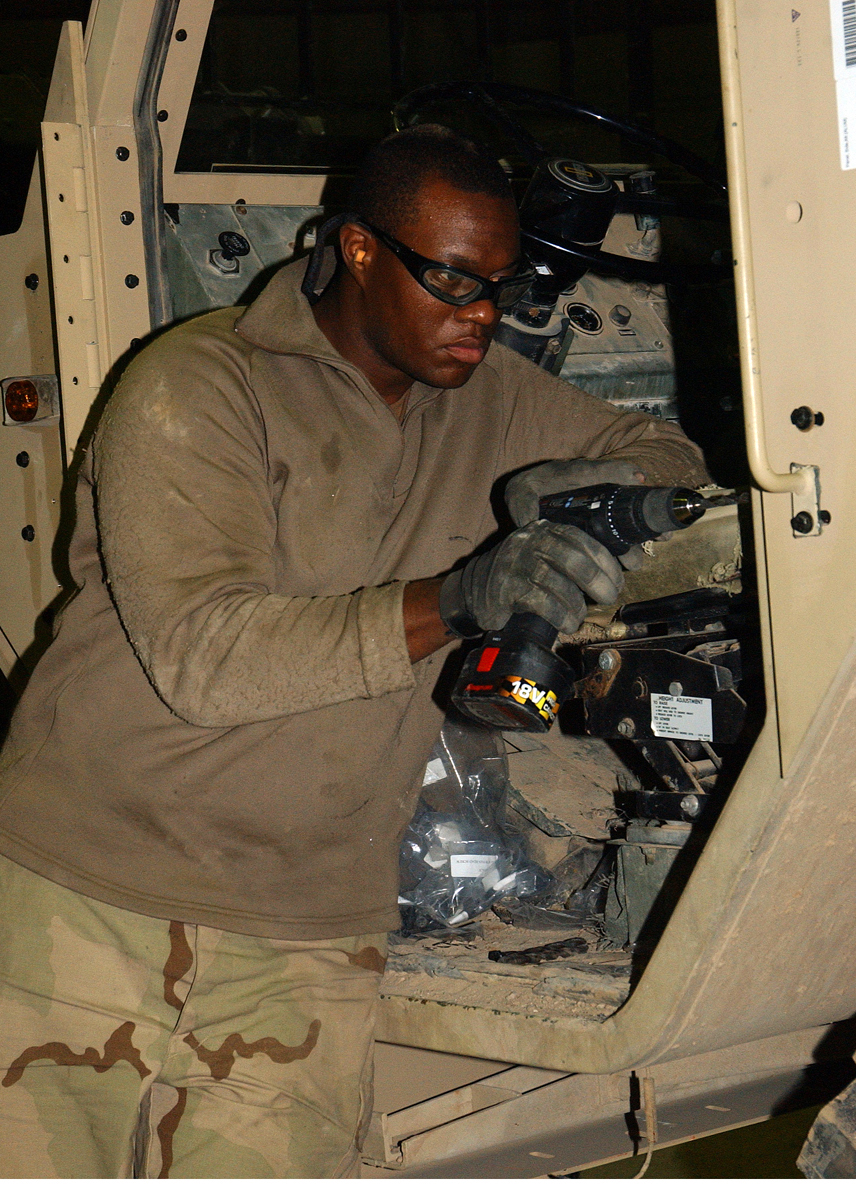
Airmen add armor to Army vehicles

BALAD AIR BASE, Iraq -- Staff Sgt. Andre Collins drills holes into the side of an Army vehicle so a combat-lock door can be installed. Sergeant Collins is a 732nd Expeditionary Logistics Readiness Squadron vehicle maintainer from Luke Air Force Base, Ariz.